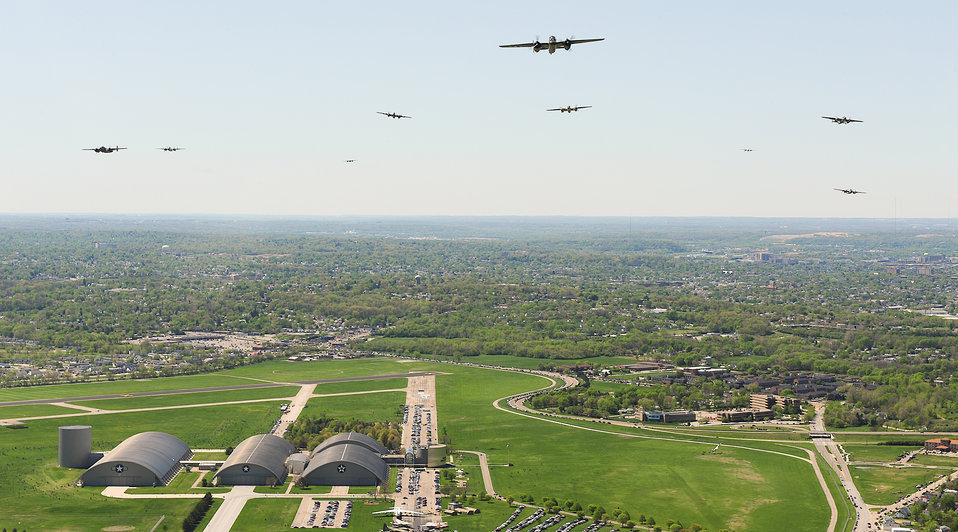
68th Doolittle Raiders Reunion

Vintage B-25 Mitchell bombers fly over the National Museum of the U.S. Air Force at Wright-Patterson Air Force Base, Ohio, during a memorial flight honoring the Doolittle Tokyo Raiders on April 18, 2010. The 68th Doolittle Raiders' reunion commemorates the anniversary of the Doolittle Tokyo Raid. On April 18, 1942, U.S. Army Air Forces Lt. Col. Jimmy Doolittle's squad of 16 B-25 Mitchell aircraft bombed Japanese targets in response to the attack on Pearl Harbor.